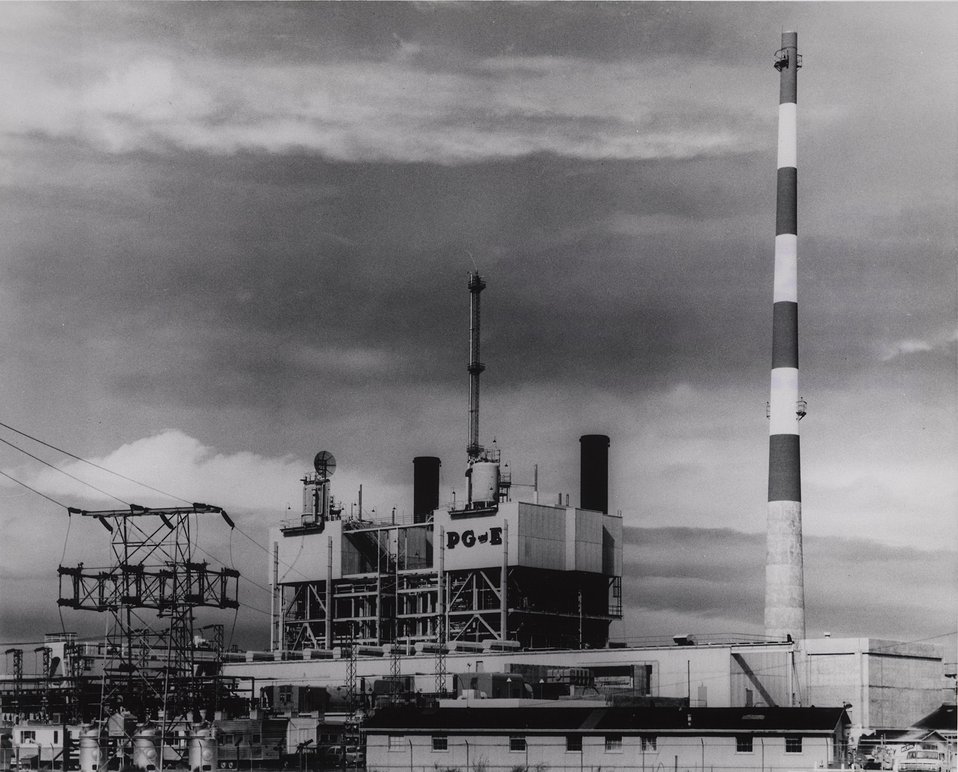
Humbolt Bay Power Plant